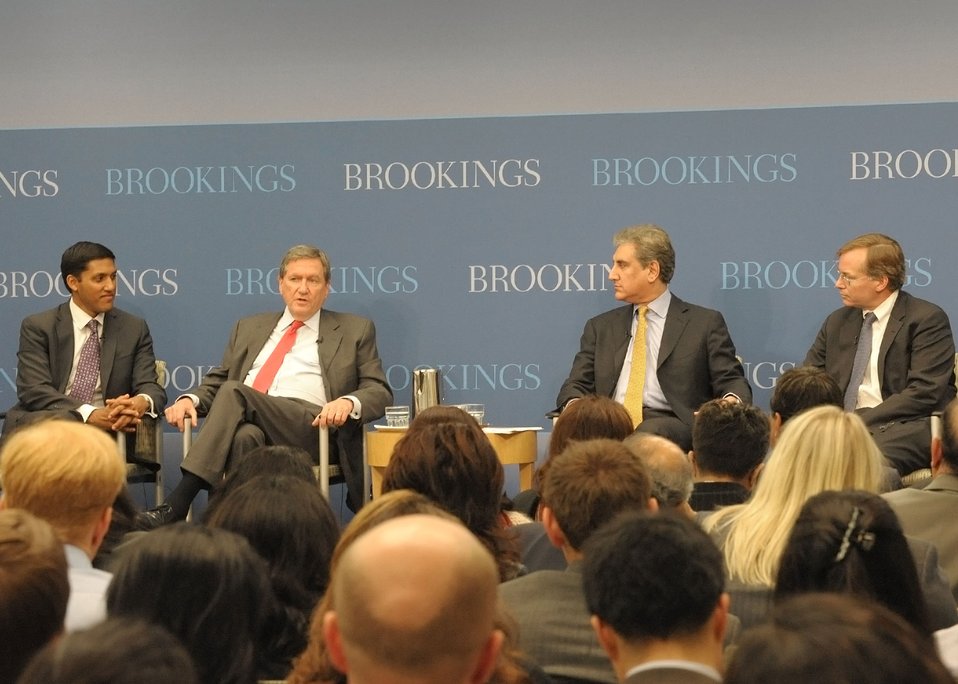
USAID Adminstrator Shah, Special Representative Holbrooke, Pakistani Foreign Minister Querishi, and New American Foundation President Coll Participate in a Panel

USAID Administrator Rajiv Shah (far left), Special Representative for Afghanistan and Pakistan Ambassador Richard C. Holbrooke (second from left), Pakistani Foreign Minister Shah Mahmoud Qureshi (second from right), and New American Foundation President Coll (far right) participate in the panel, U.S. and Pakistan: Partners in Development, hosted by Asia Society and Brookings at the Brookings Institution in Washington, D.C., on October 20, 2010.